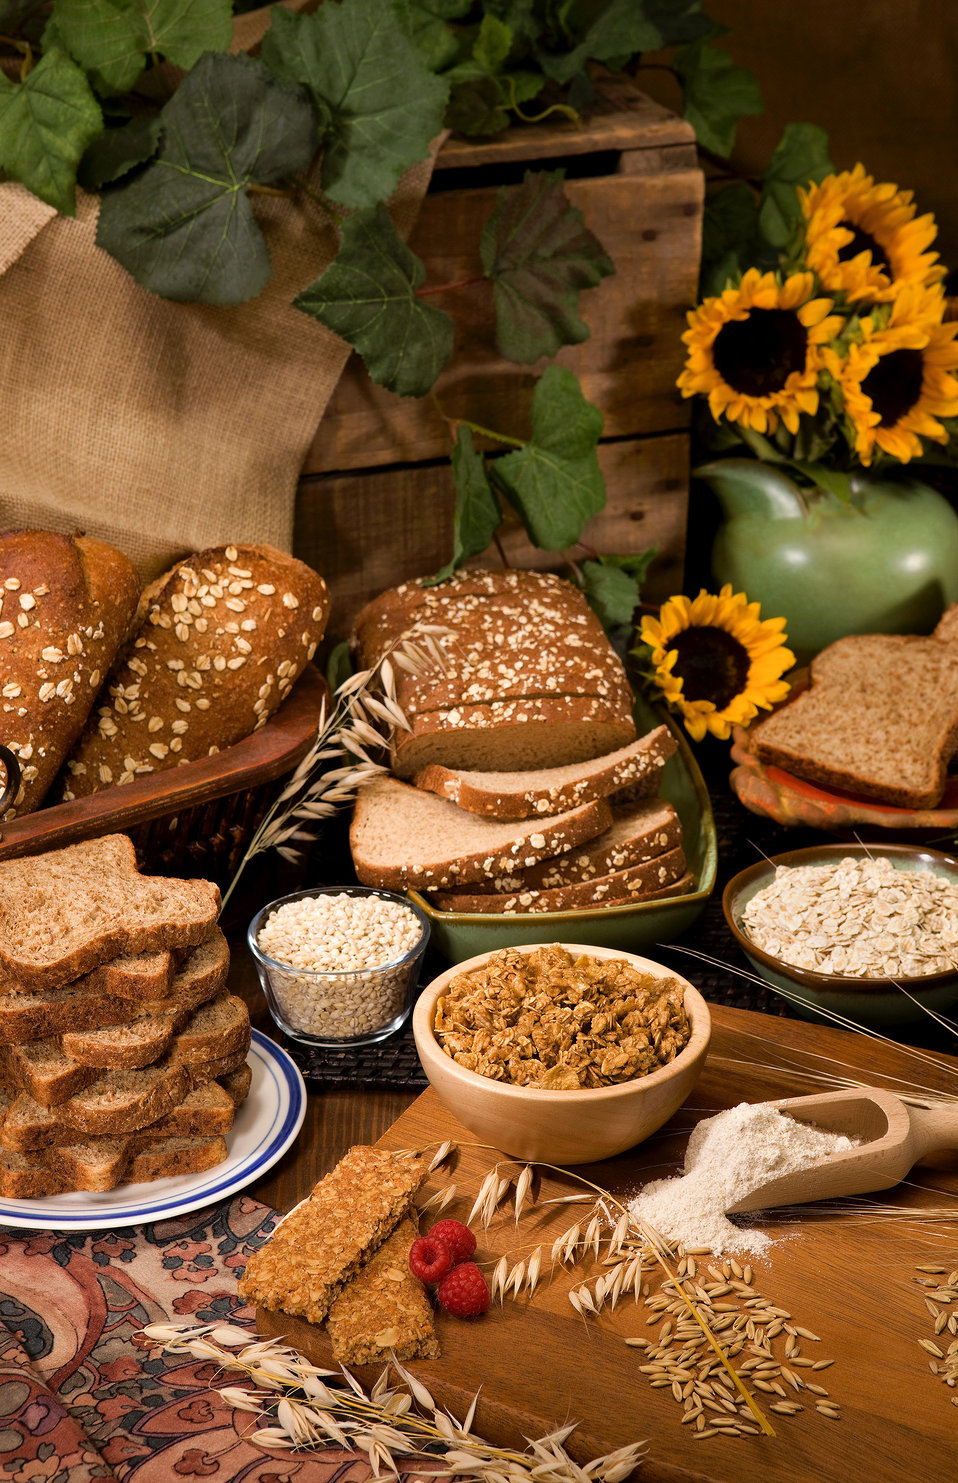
A selection of the many foods derived from oats and barley are breads, health bars, pearled barley, barley and oat flakes, hot and cold cereals, and oat and barley flour are displayed on Apr. 16, 2001. U.S. Department of Agriculture (USDA) Agricultural Research Service (ARS) scientists are helping farmers, food producers, and consumers reap production and nutritional benefits through oat and barley research.